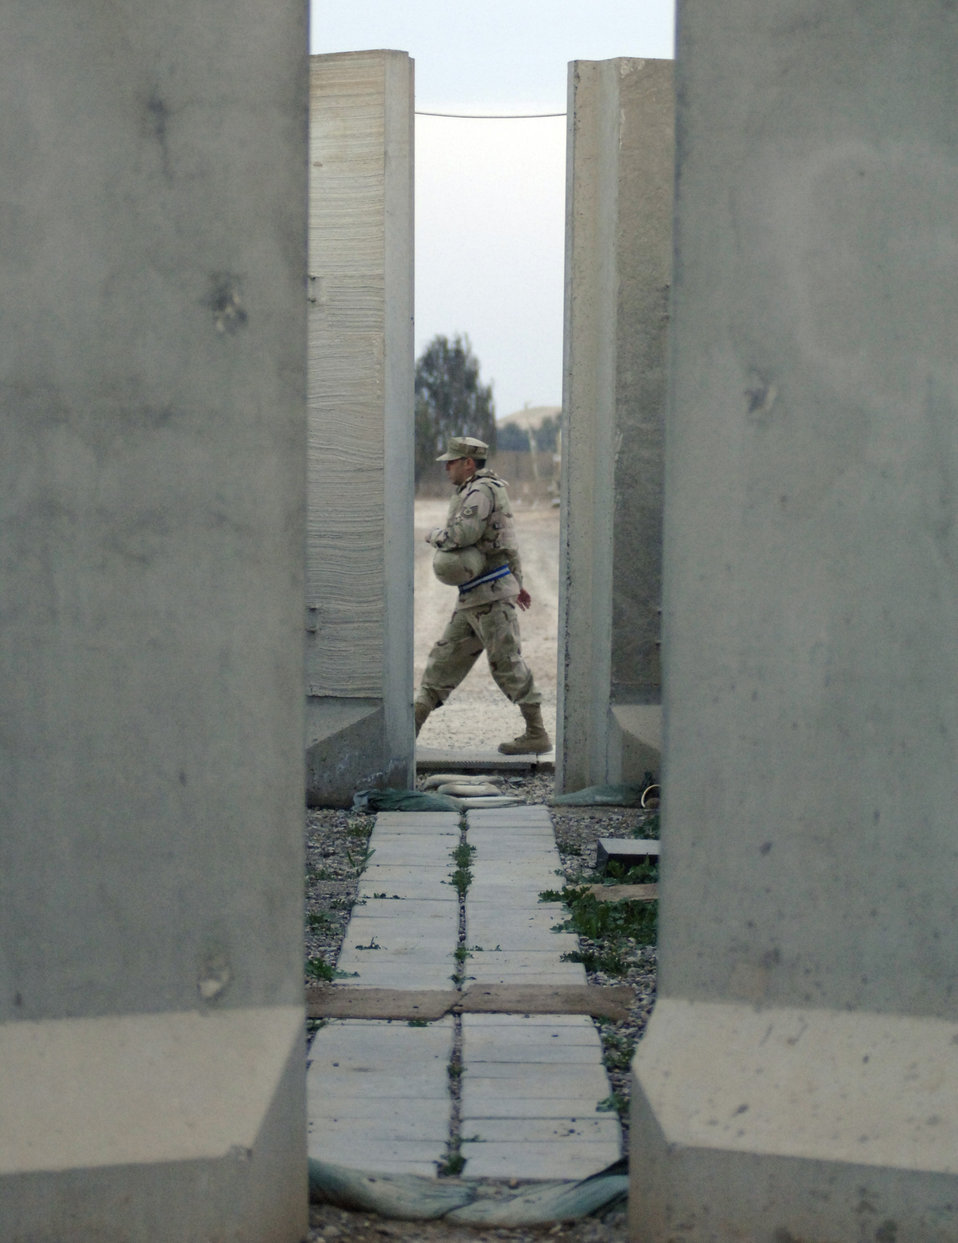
T-barrier protection

An Airman walks between a row of large T-barriers Feb. 22 at Balad Air Base, Iraq. Most Airmen assigned to the base live in a compound surrounded by T-barriers, which act as a line of defense against stray bullets and mortar attacks. The pathways serve as a shield for more than 3,300 Airmen.